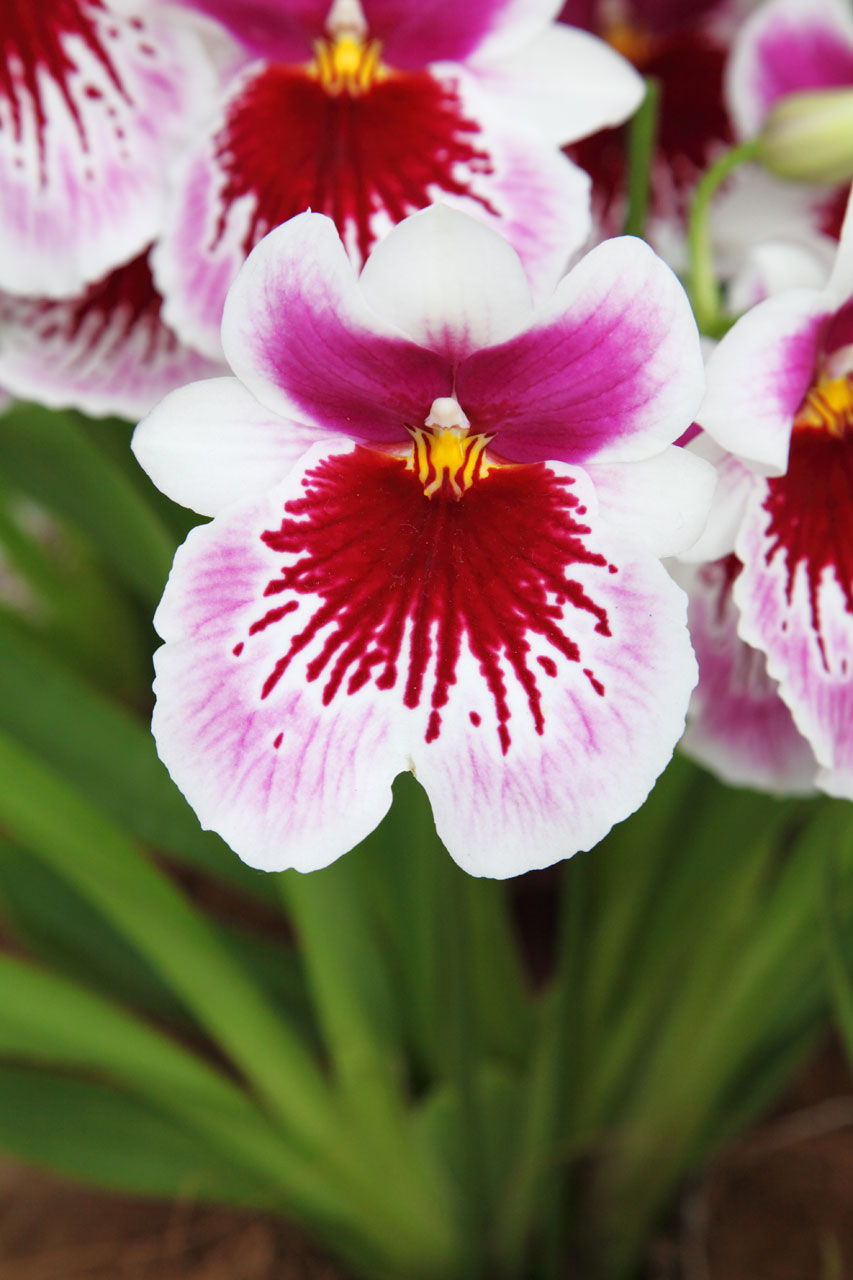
Pink white orchid closeup.